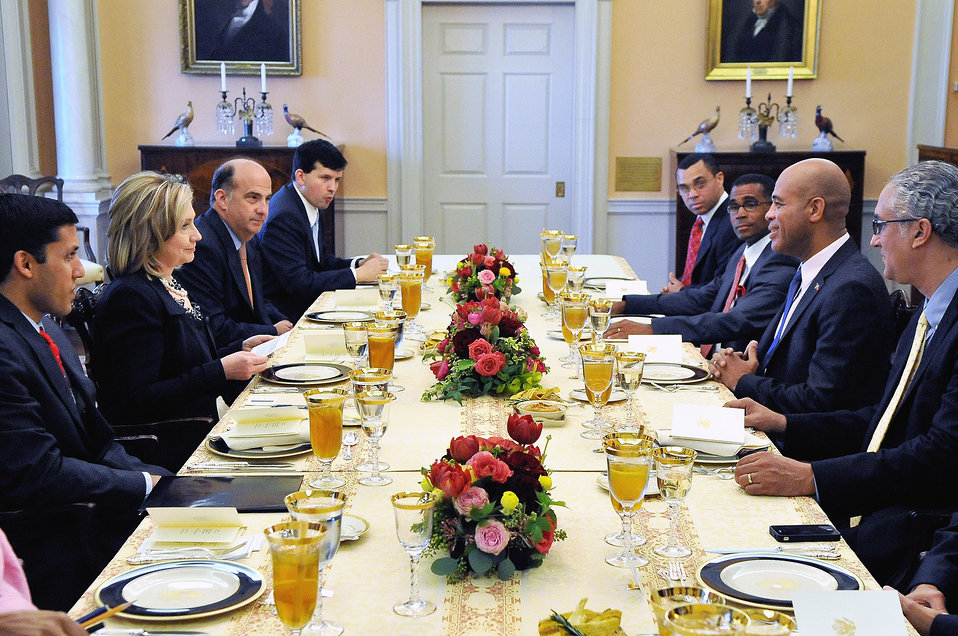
Secretary Clinton Holds a Working Lunch With Haitian President-Elect Martelly

U.S. Secretary of State Hillary Rodham Clinton holds a working lunch with Haitian President-elect Michel Martelly, at the U.S. Department of State in Washington, D.C., on April 20, 2011. Sitting to Secretary Clinton's left is USAID Administrator Rajiv Shah.